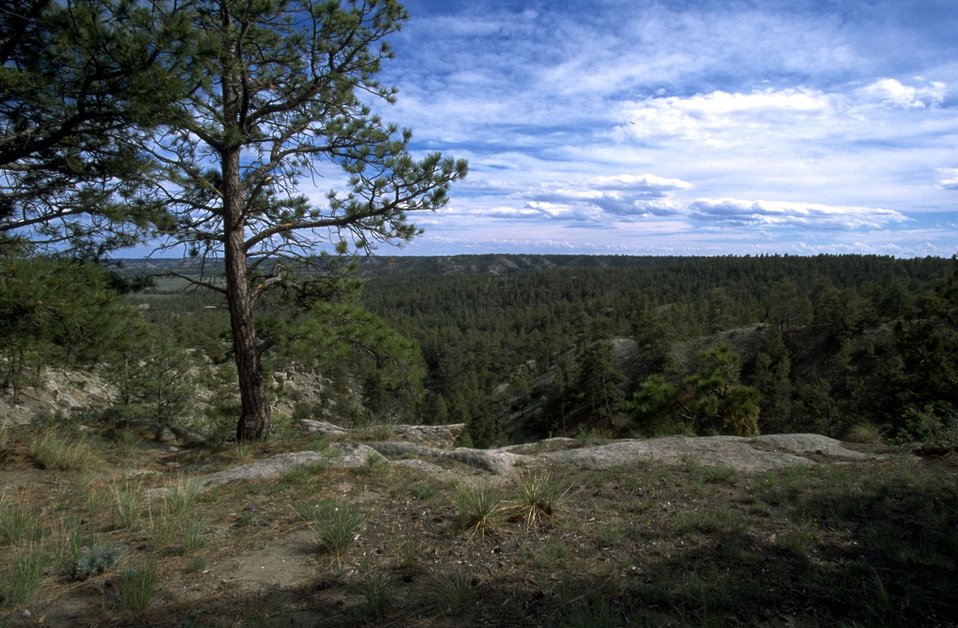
Looking south from rimrocks in the Acton Recreation Area